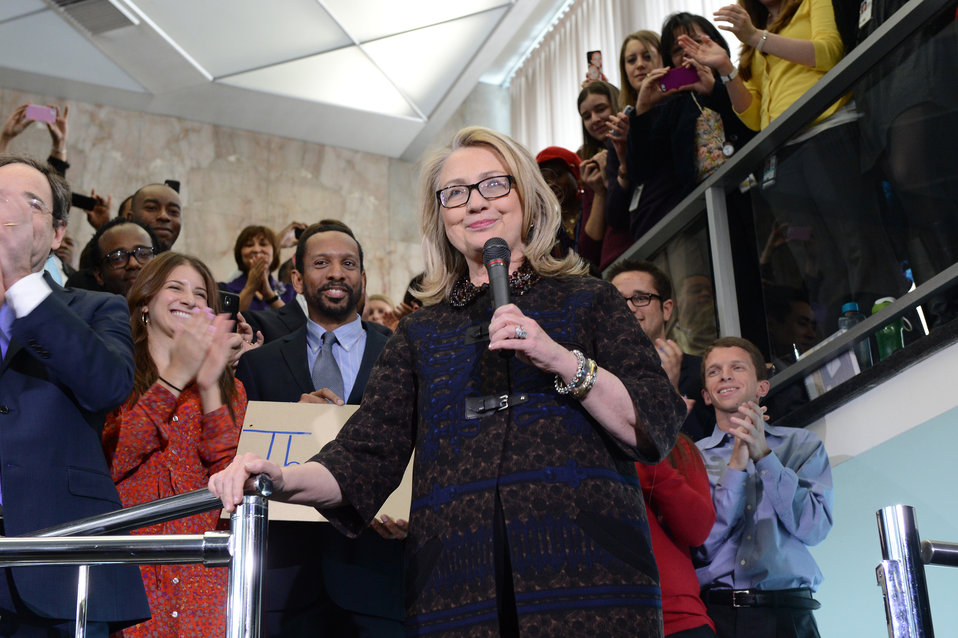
Secretary Clinton Says Farewell

U.S. Secretary of State Hillary Rodham Clinton says farewell to State Department employees at the U.S. Department of State in Washington, D.C., on February 1, 2013.